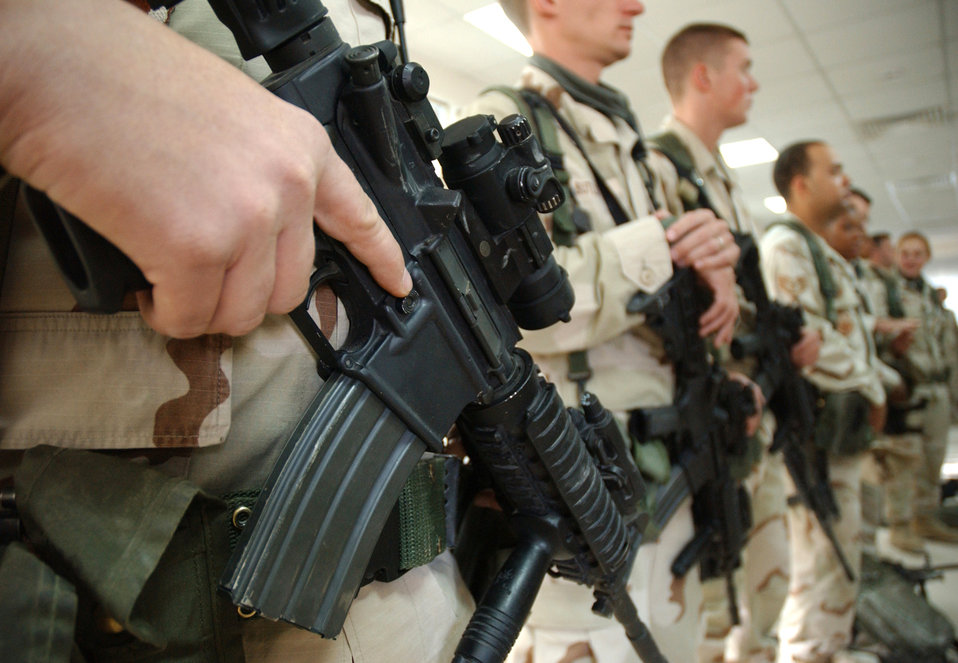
Guard mount

SOUTHWEST ASIA (AFPN) -- Security forces Airmen stand at ease during a guard mount call at a deployed location Feb. 19. The Airmen are with the 379th Expeditionary Security Forces Squadron.